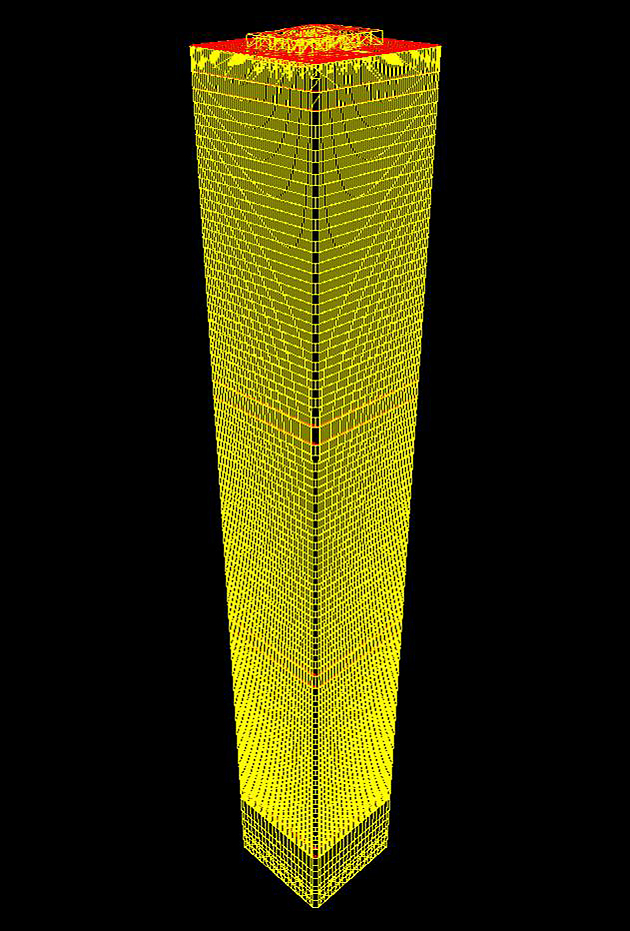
Wind Load Modeling

Single frame of a computer simulation (containing 90,000 elements) of the World Trade Center North Tower as it responds to wind loads. NIST investigators conducted an analysis of the wind loads that the World Trade Center towers were originally designed to resist as part of the agency's federal building and fire safety investigation of the WTC disaster.